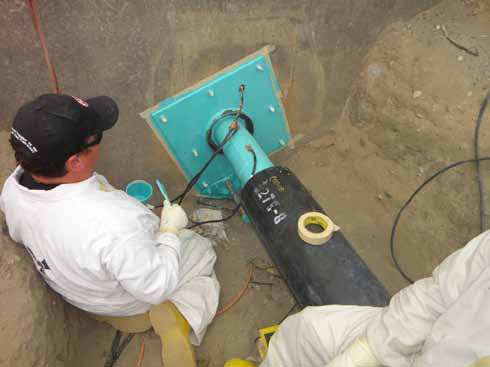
SY Farm Transfer Line Project Nears Completion

Crews in Hanford’s SY Farm have removed and replaced more than 700 feet of waste transfer lines that will carry waste from underground storage tanks to the Waste Treatment Plant.